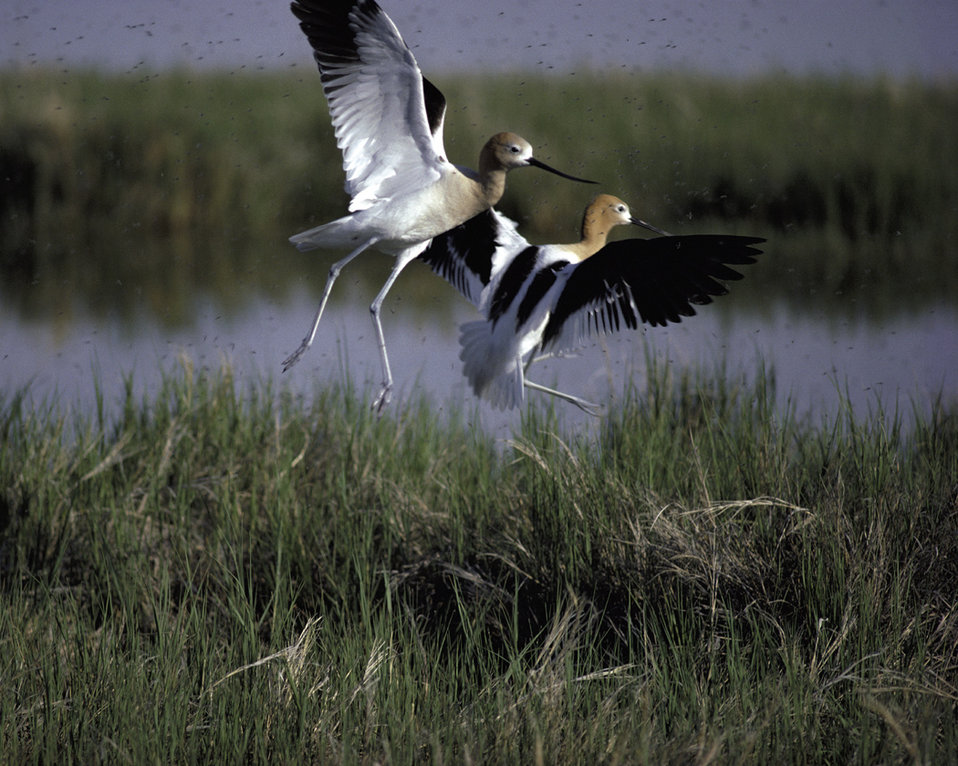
avocets

Bear River Migratory Bird Refuge, UT